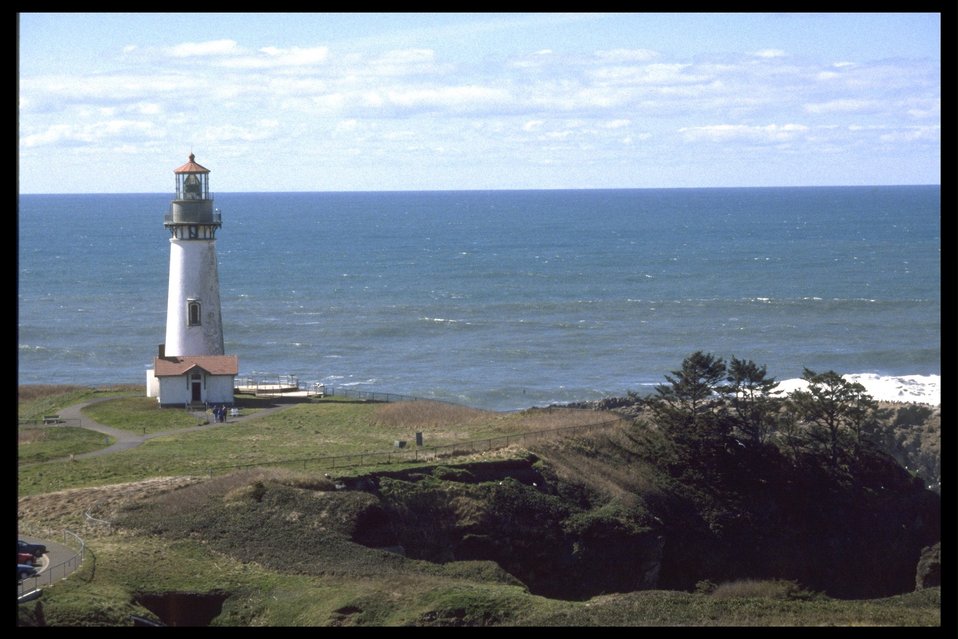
Yaquina Head Lighthouse.